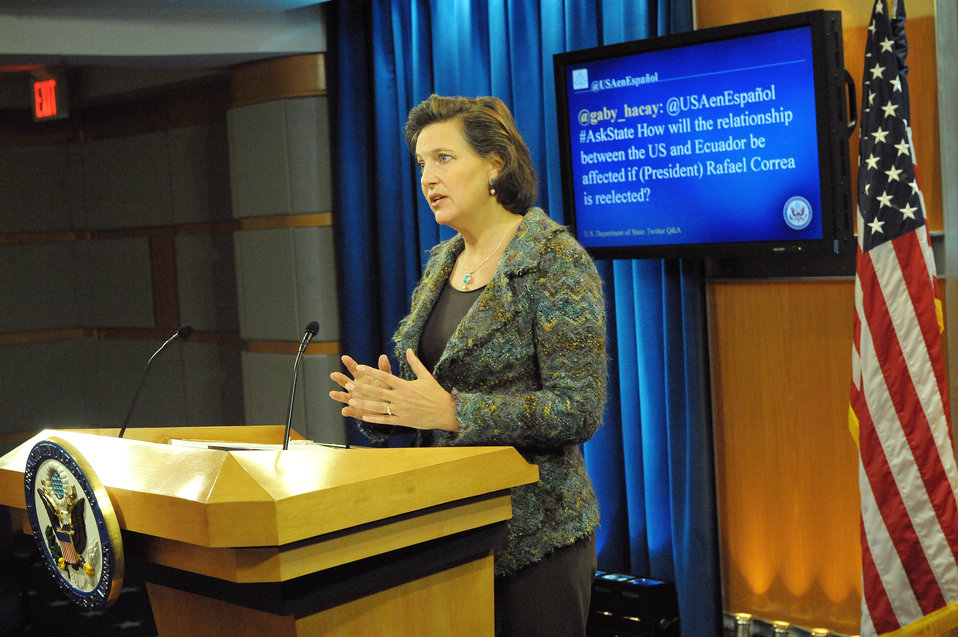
Spokesperson Nuland Responds to a Question from @USAenEspanol

Victoria Nuland, Spokesperson for the U.S. Department of State, answers a question selected from the Department’s official Spanish Twitter feed, @USAenEspanol, on January 13, 2012.